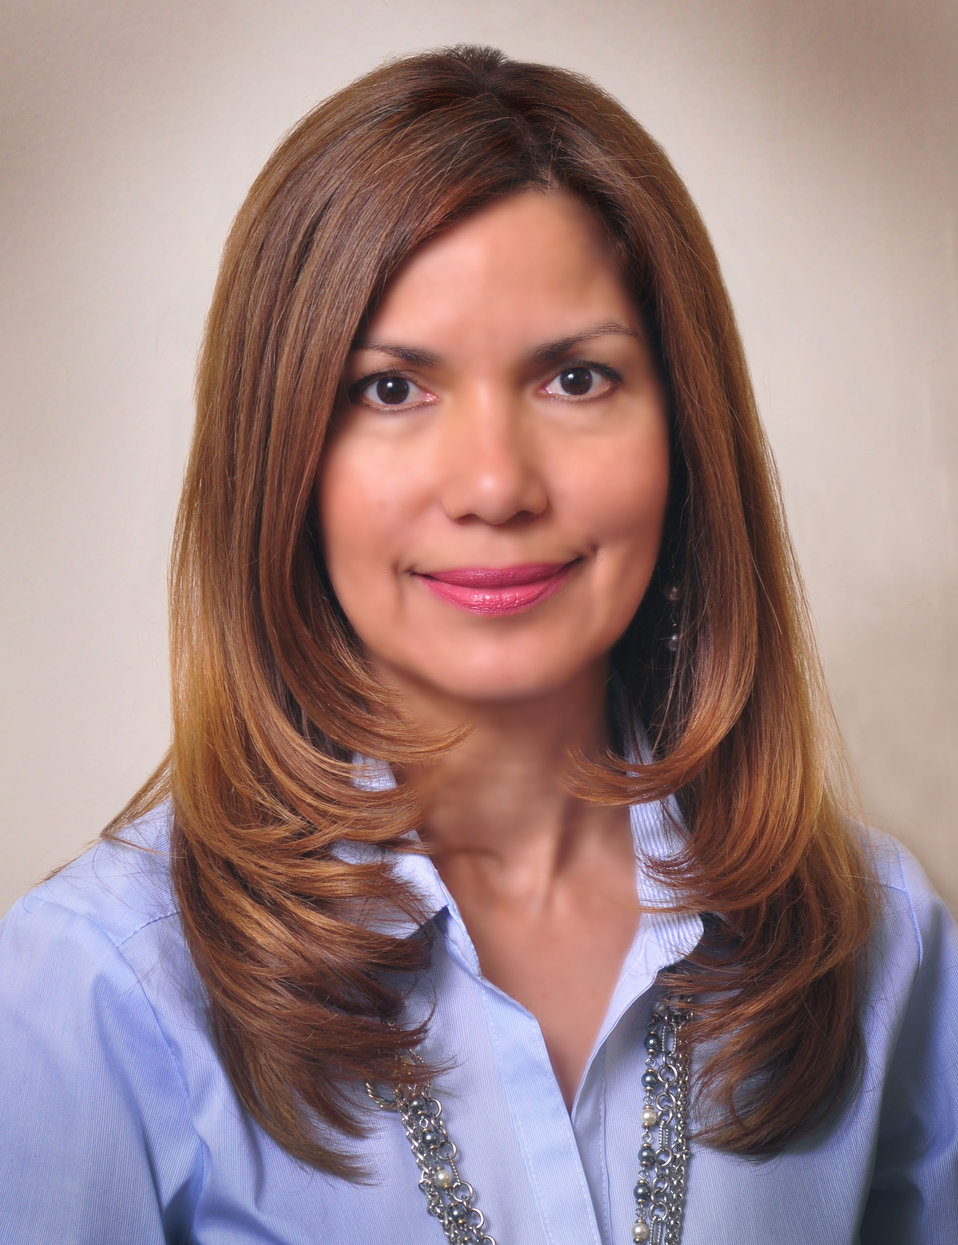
Mildred López-Ferré named Deputy Assistant Manager for Safety and Technical Services at DOE’s Oak Ridge Office

14-051 DOE photo Lynn Freeny 2014 Oak Ridge Tennessee